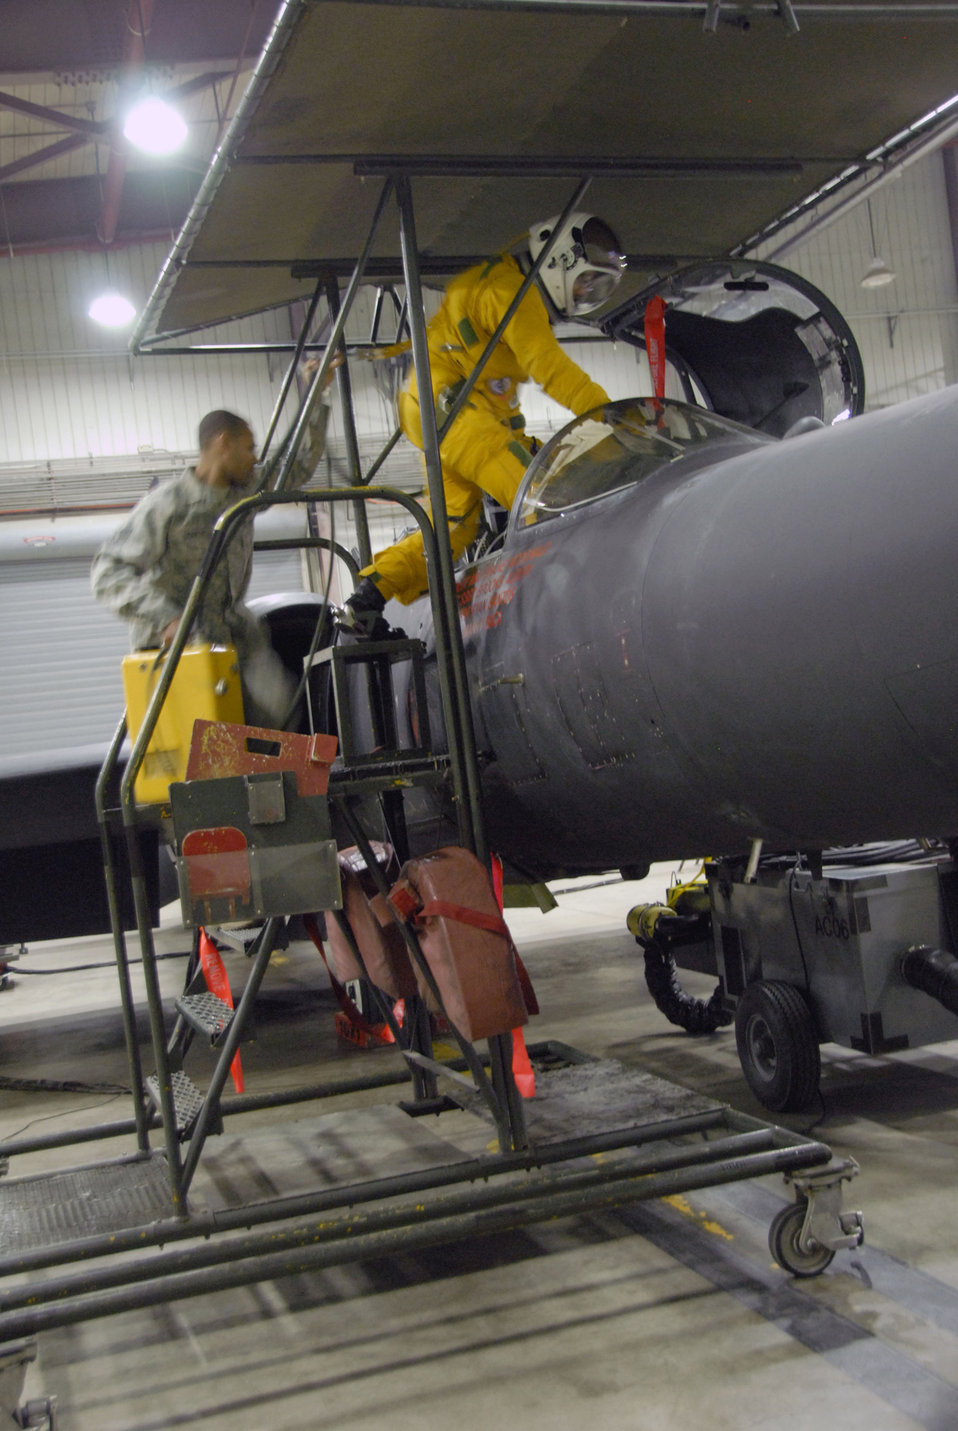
Optical bar camera

U.S. Air Force Capt. Beau Block climbs into a U.S. Air Force U-2 high-altitude, all-weather surveillance and reconnaissance aircraft March 13, 2011, at Osan Air Base, South Korea, to fly a humanitarian mission to capture imagery of the earthquake- and tsunami-affected areas of Japan. Captain Block is with the 5th Reconnaissance Squadron.